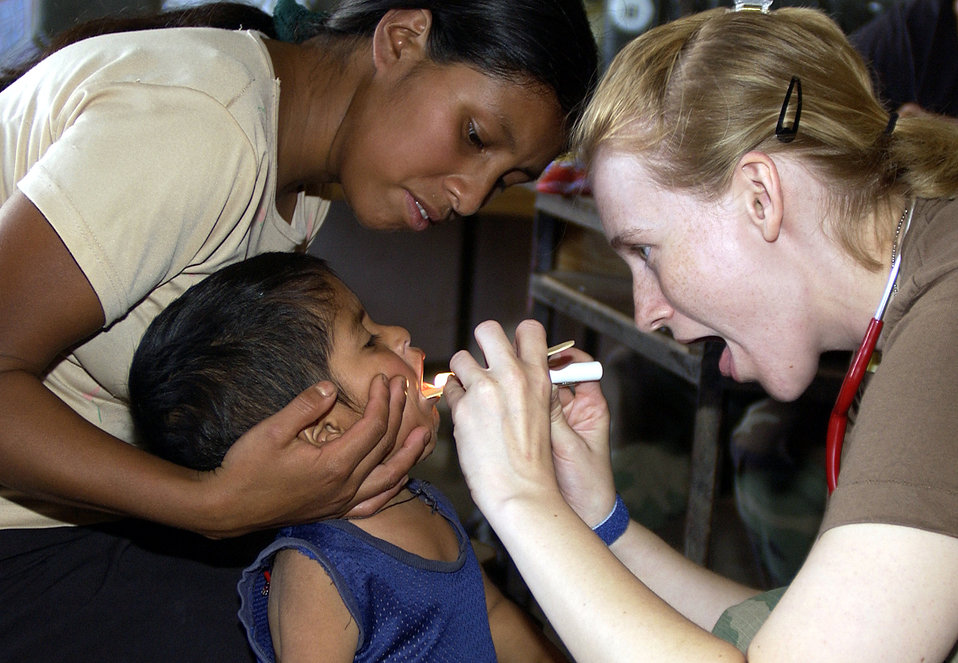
Say ‘ahhh’

SAN ANTONIO, Honduras -- Capt. (Dr.) Carrie Schmid examines a Honduran child during medical readiness training here Sept. 22. Medics from nearby Soto Cano Air Base organized the training for doctors from Wilford Hall Medical Center at Lackland Air Force Base, Texas, and the Uniform Services University of Health Sciences, in Bethesda, Md. The doctors treated hundreds of children and expectant mothers during a three-day period. Dr. Schmid is from Wilford Hall.